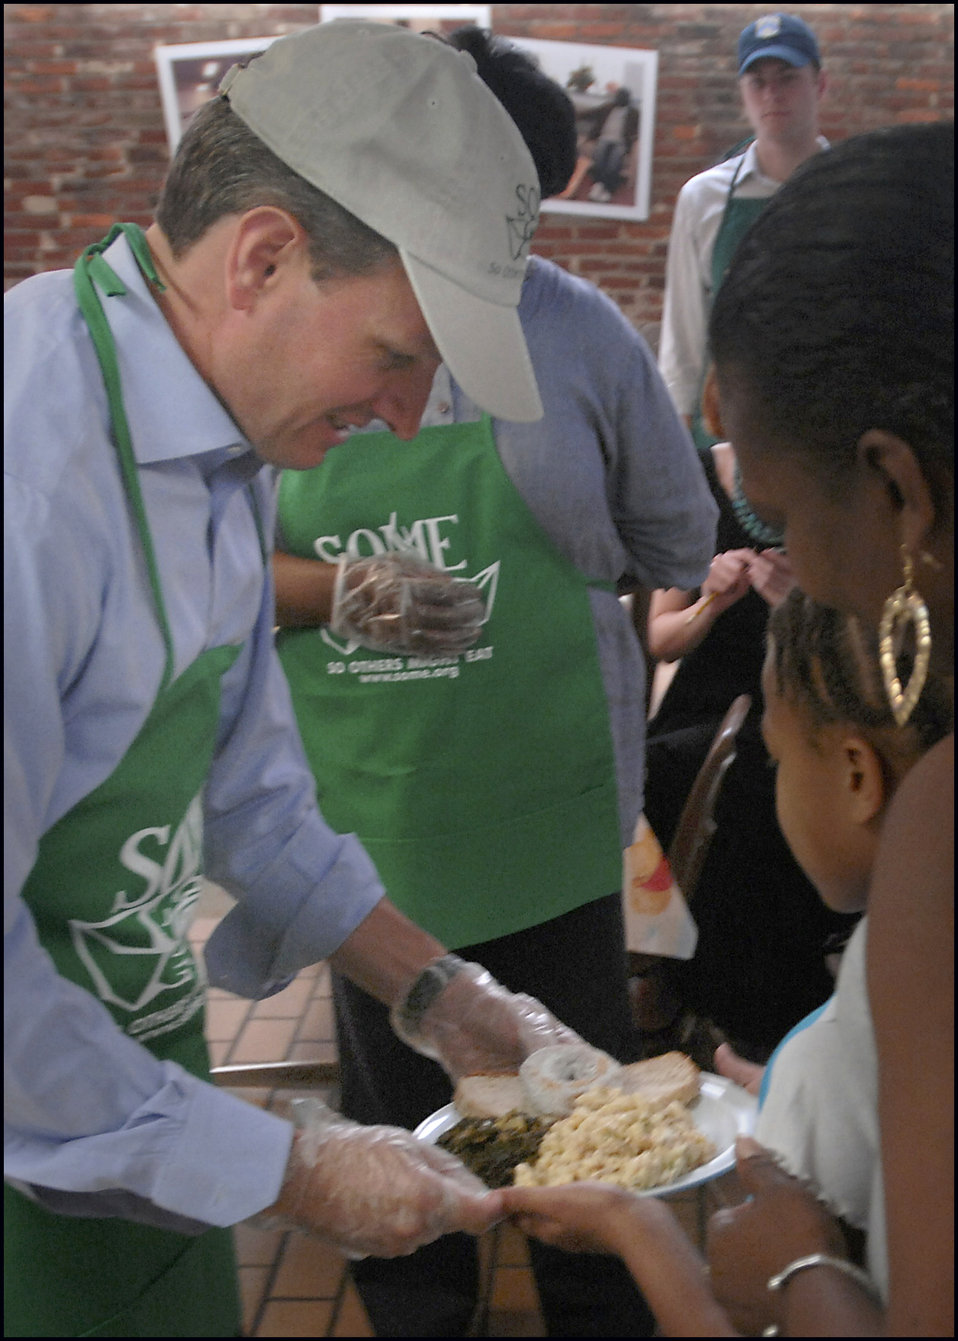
United We Serve at SOME: June 25, 2009

Secretary Geithner serving food to Washington DC’s hungry and homeless at So Others Might eat (SOME), as part of the Obama Administration’s ''United We Serve'' summer service initiative on June 25, 2009.